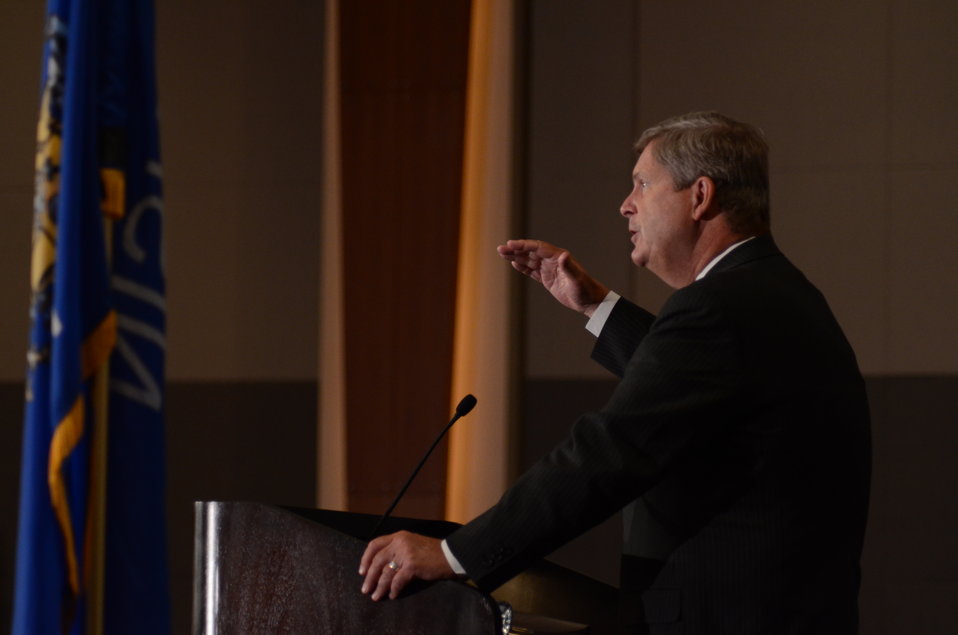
Agriculture Secretary Tom Vilsack speaks at the International Association for Food Protection (IAPP) 100th annual meeting in Milwaukee, WI, on Wednesday, August 3, 2011. IAPP is committed to providing members worldwide with a forum to exchange information on protecting the global food supply.